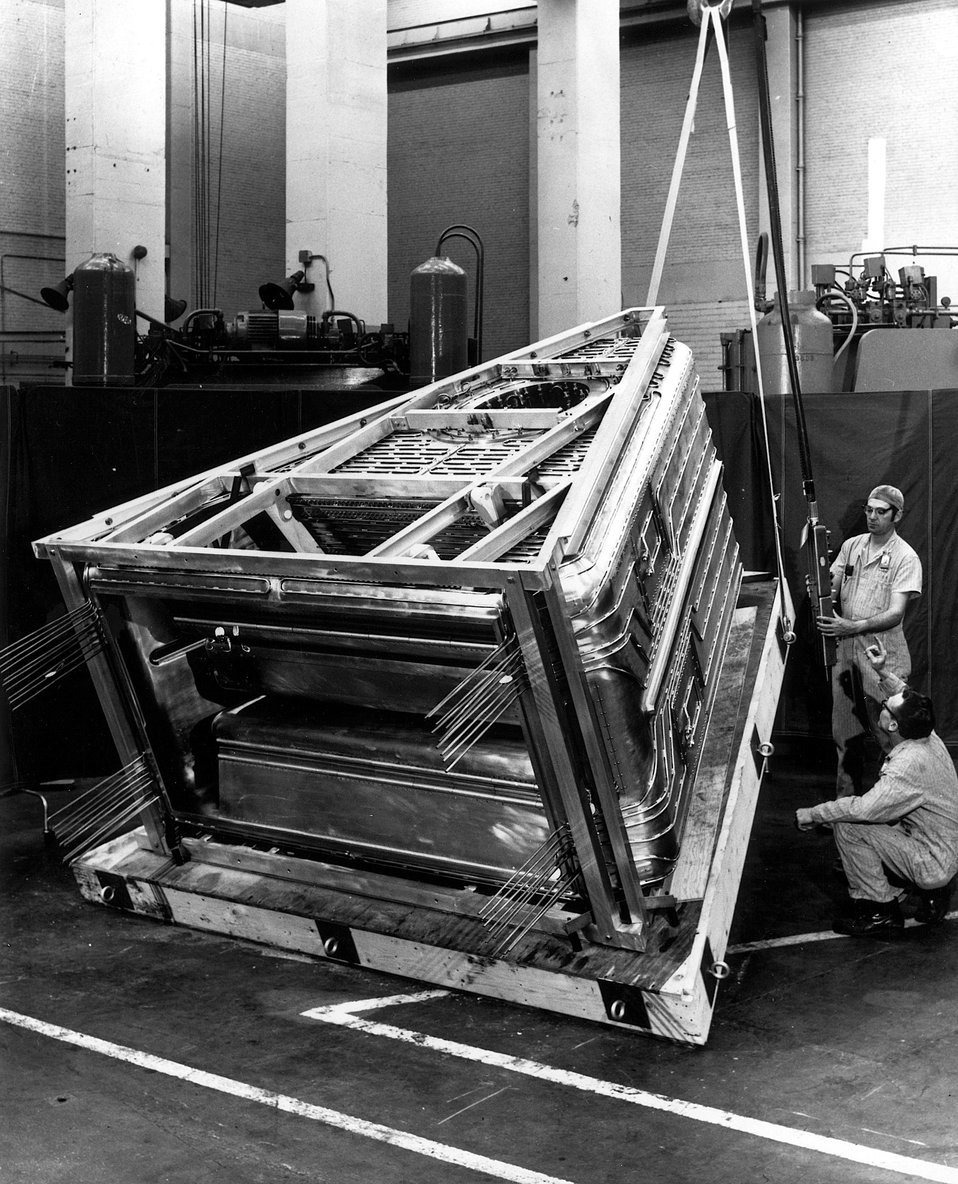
Oak Ridge Y-12 Plant craftsmen pose with one of two reactor units made by the plant for Indiana University's new cyclotron facility in Bloomington. Circa 1975.